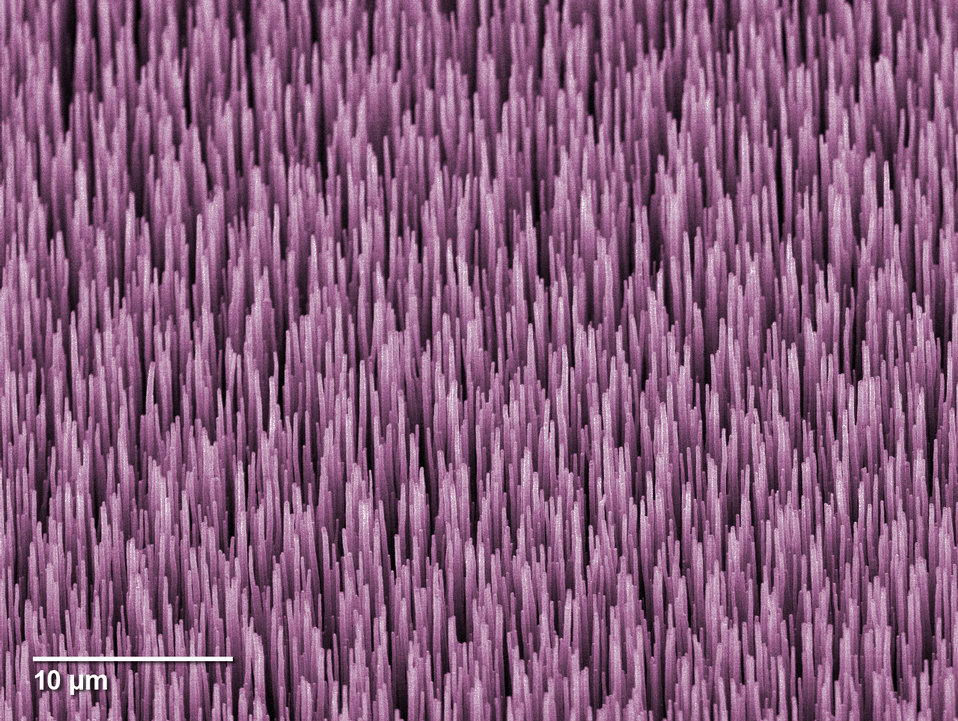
Nanotubes

Colorized micrograph of multi-walled carbon nanotubes, each 40 micrometers long, which absorb more than 99.9 percent of the light inside NISTs prototype fiber-coupled radiometer.

See also www.nist.gov/pml/div686/radiometer-122011.cfm.

Credit: Huang/NanoLab, colorized by Talbott/NIST